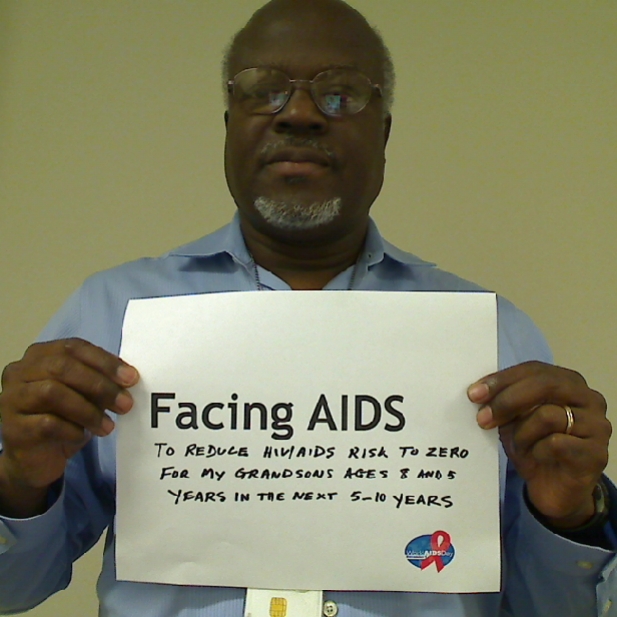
Facing AIDS To reduce HIV/AIDS risk to zero for my grandsons ages 8 and 5 years in the next 5-10 years